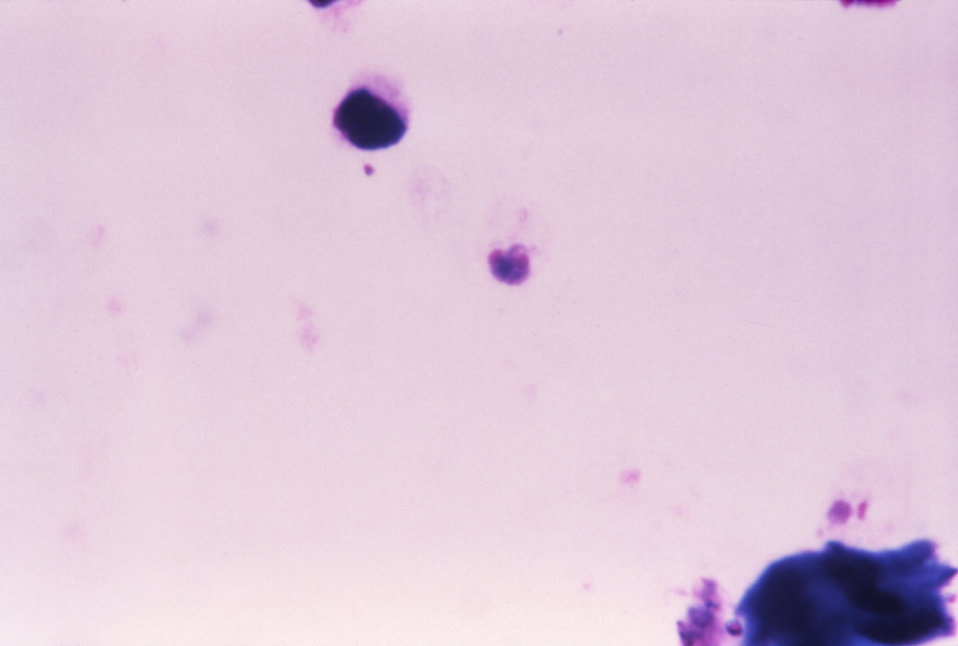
This thick film Giemsa stained micrograph reveals an immature Plasmodium vivax trophozoite.